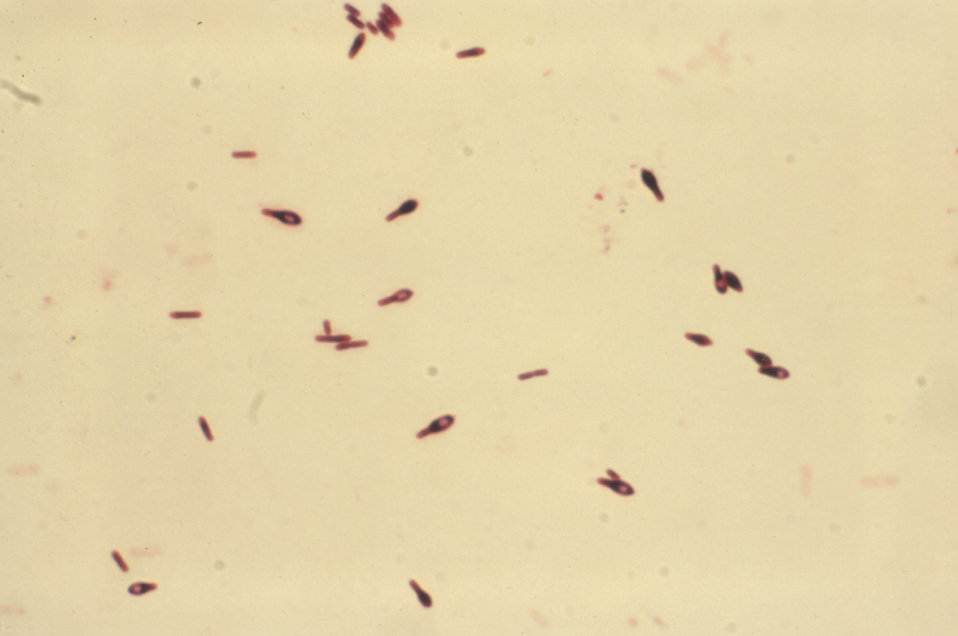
This Gram-stained micrograph of Clostridium botulinum Type-A in thioglycollate broth was incubated for 48hrs at 35�C.